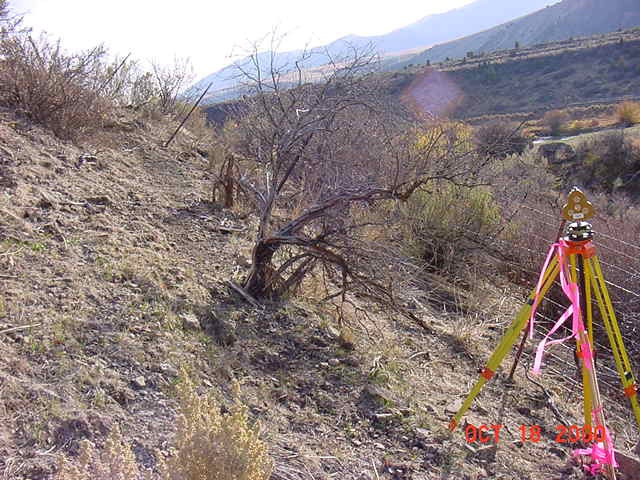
Cadastral Surveys Idaho Bureau of Land Management